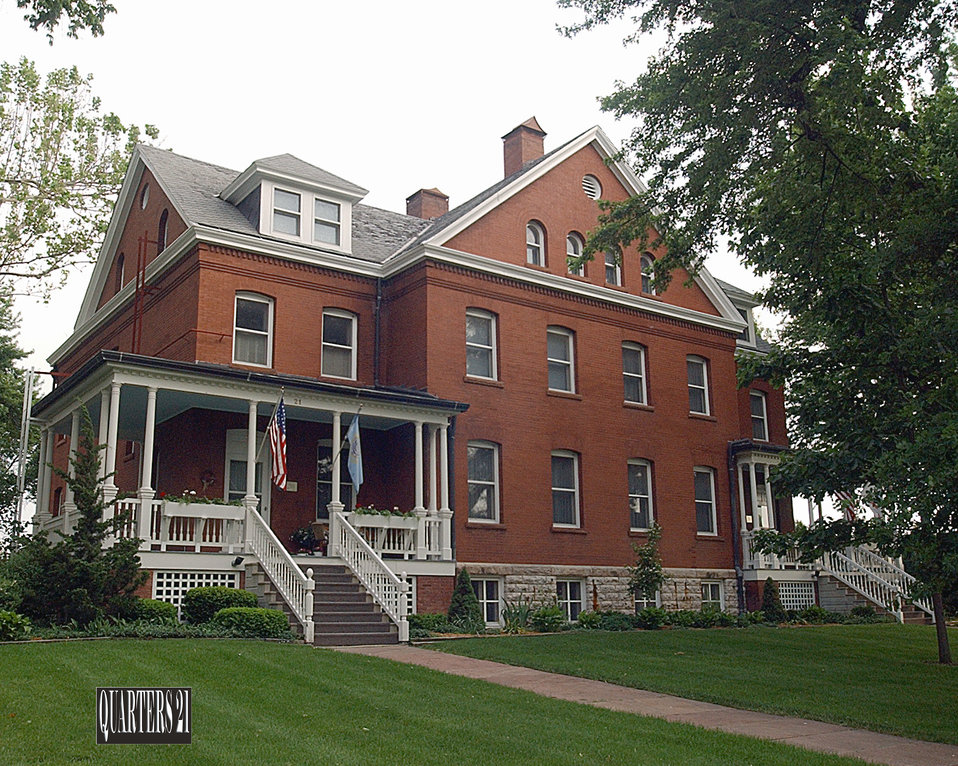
20-Year-Old Letter

A letter written by a 12-year-old girl was found in a wall in the Offutt Air Force Base home pictured here and returned to her 20 years later.